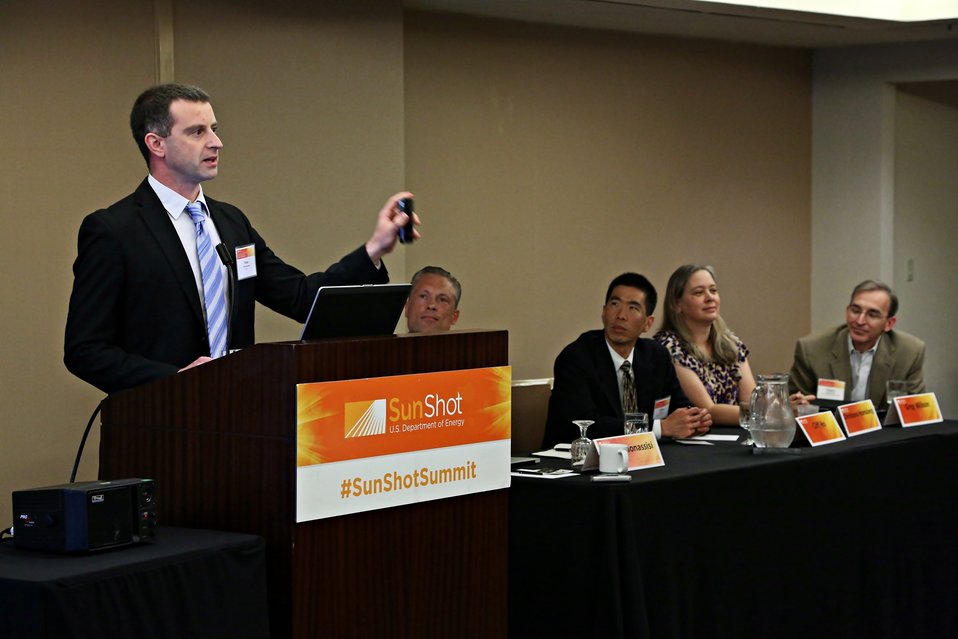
Breakout Sessions 15